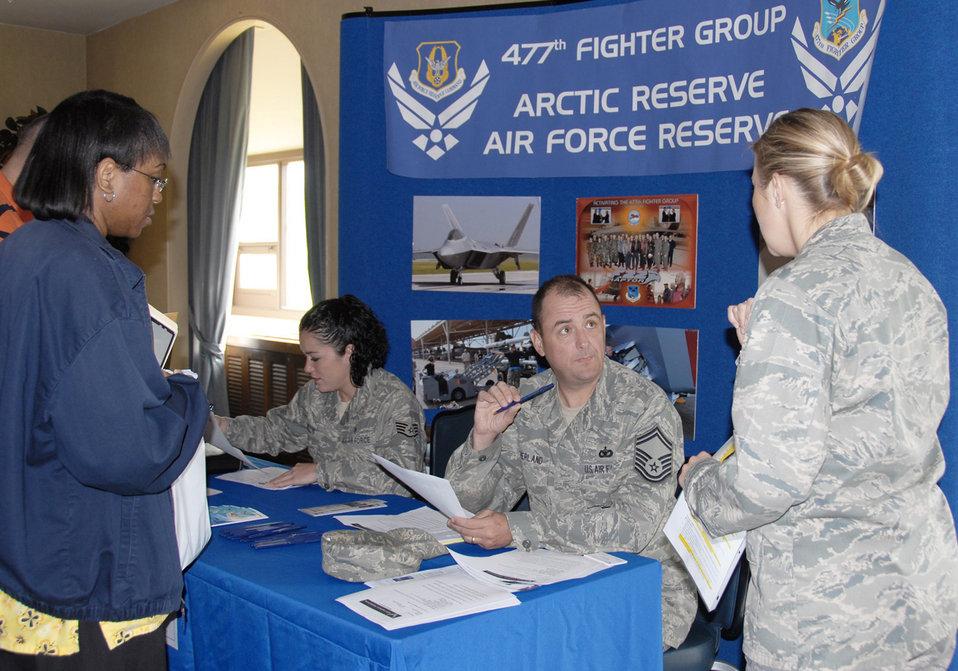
Alaska unit hosts overseas IRR muster

Recruiters from the 477th Fighter Group answer questions and provide information to Individual Ready Reserve members at a one-day IRR muster at Elmendorf Air Force Base, Alaska, June 12. Musters are designed to obtain updated contact information for IRR members and their availability for mobilization.